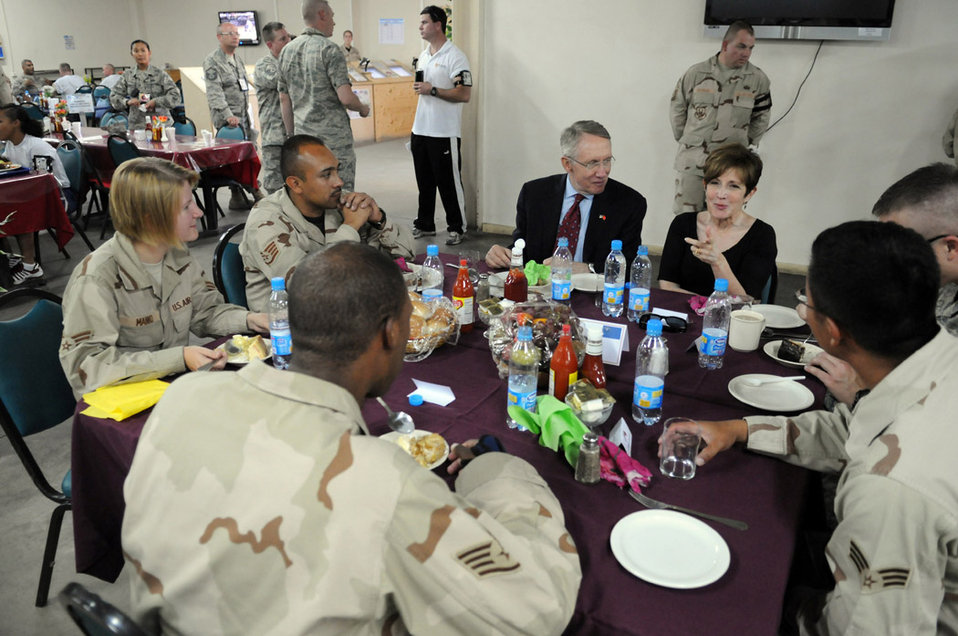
Congressmen visit servicemembers in Manas

Sen. Harry Reid and his wife, Landra, talk with Airmen from his home state of Nevada during a luncheon at Manas, Aug. 5. The Nevada congressman and U.S. Senate majority leader led a congressional delegation that visited the base as a part of an eight-day congressional delegation trip to promote security, democracy and development in central Asia. While at Manas, the senators visited with deployed Airmen and learned about the wing's mission as an air mobility hub supporting operations in Afghanistan.